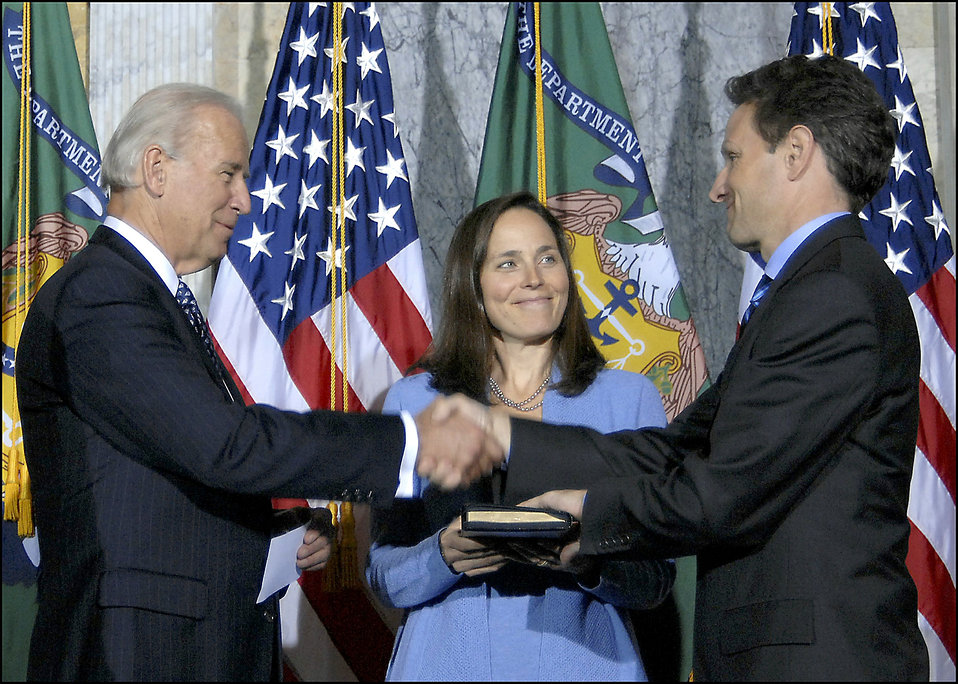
Secretary Geithner being sworn-in

Vice President Joe Biden swearing in Secretary Geithner as United States Secretary of the Treasury on January 26, 2009. Carole Sonnenfeld Geithner looks on.